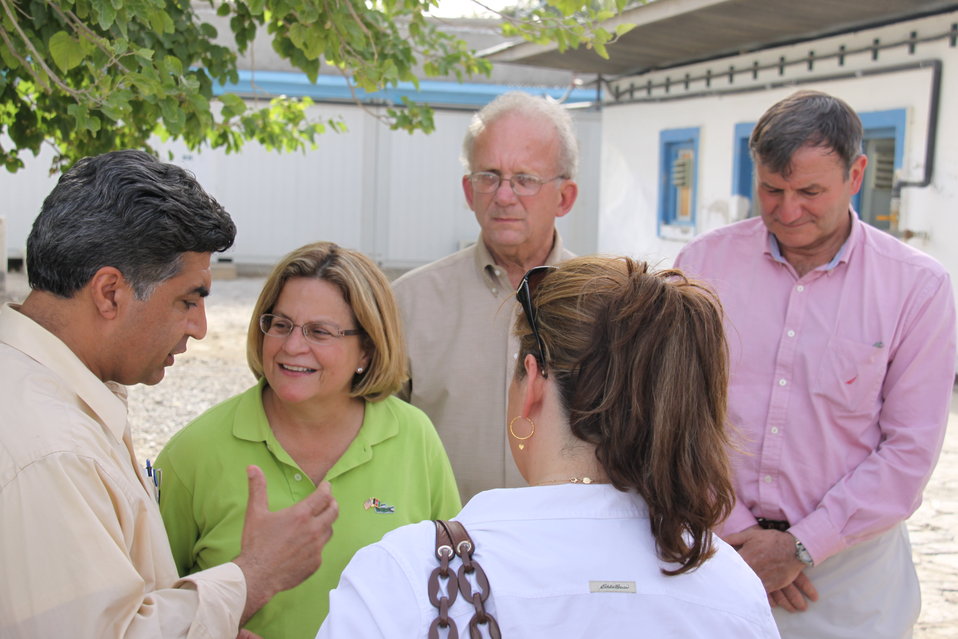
Meeting with Local Leaders in Kandahar